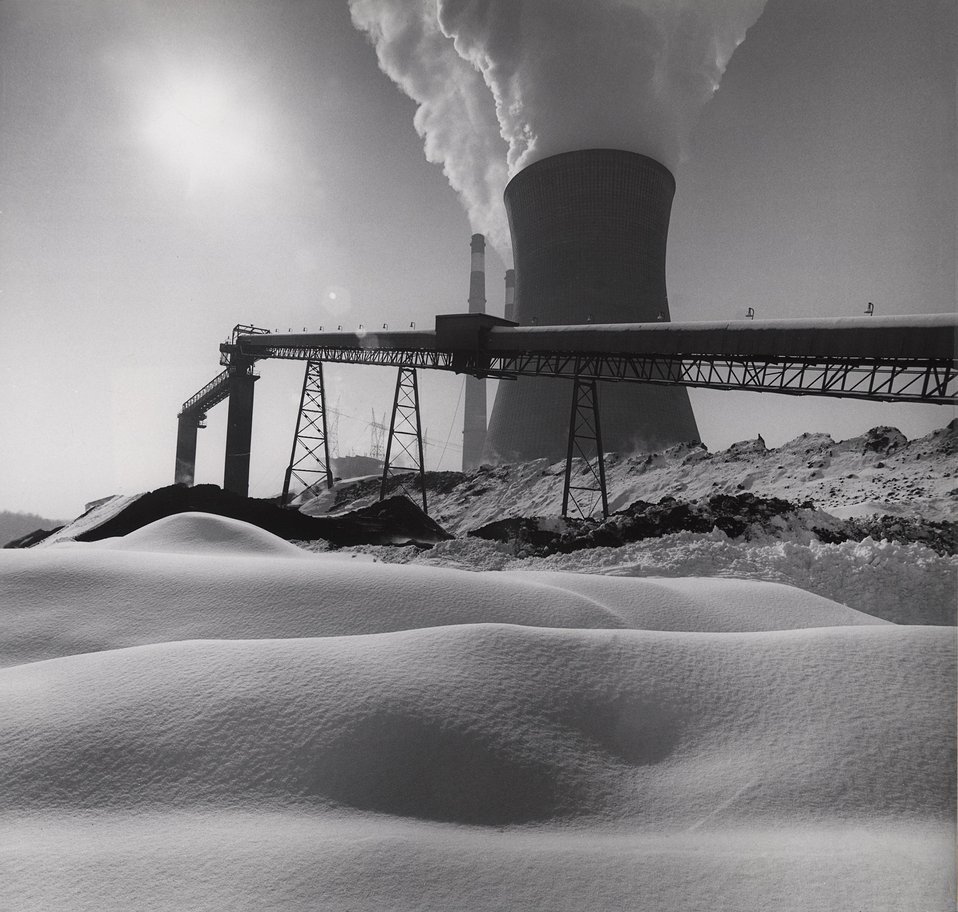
January 25, 1978-drifted snow in front of coal pile and coal conveyer belt at Hatfield's Ferry Power Plant.